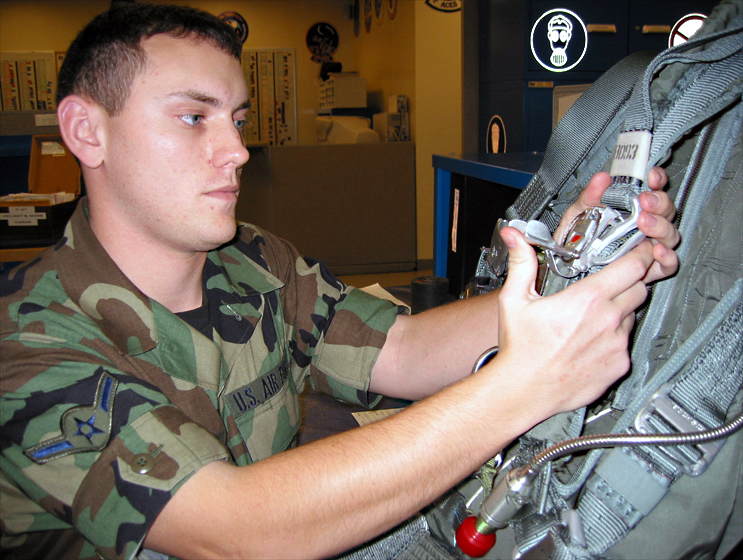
Parachute inspection

LAUGHLIN AIR FORCE BASE, Texas -- Airman Jacob Pegg, a life support technician here, inspects a parachute. Last year, the life support team conducted about 35,000 regular equipment inspections. Adding support to the T-6 Texan crews, the team expects to top 40,000 inspections this year.